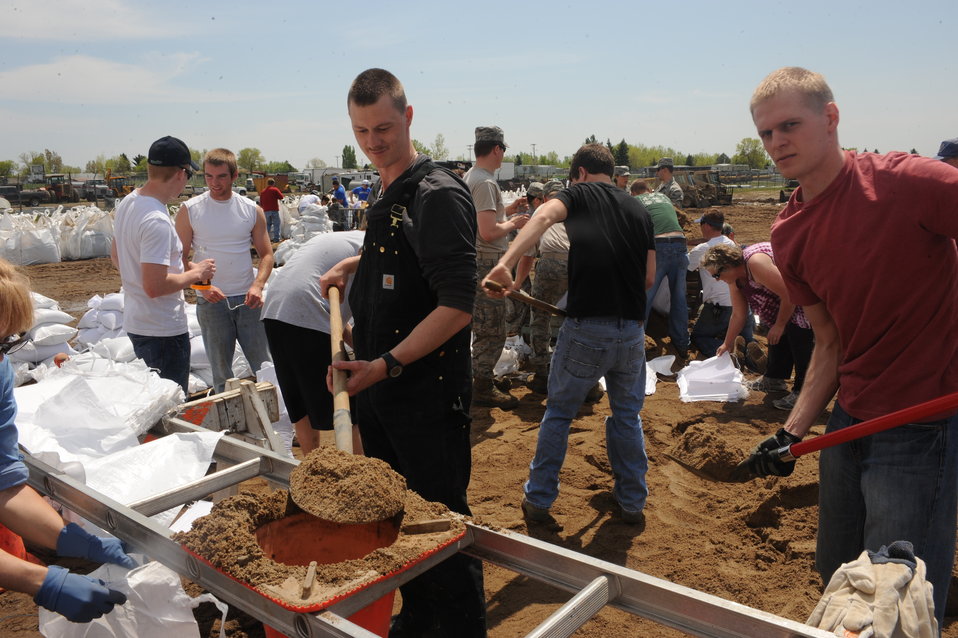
Minot Airmen help neighbors as flood water rises

Airmen and local citizens work together to prepare sandbags for the incoming floods June 1, 2011, in Minot, N.D. In preparation for possible flooding, the city of Minot, with assistance from Airmen from Minot Air Force Base, North Dakota National Guard as well as many other organizations, are setting up secondary dikes along the river. The Souris River threatens to break the levies already in place, thousands of Minot citizens, including military members, their families and DOD civilians, have been forced to evacuate the area.